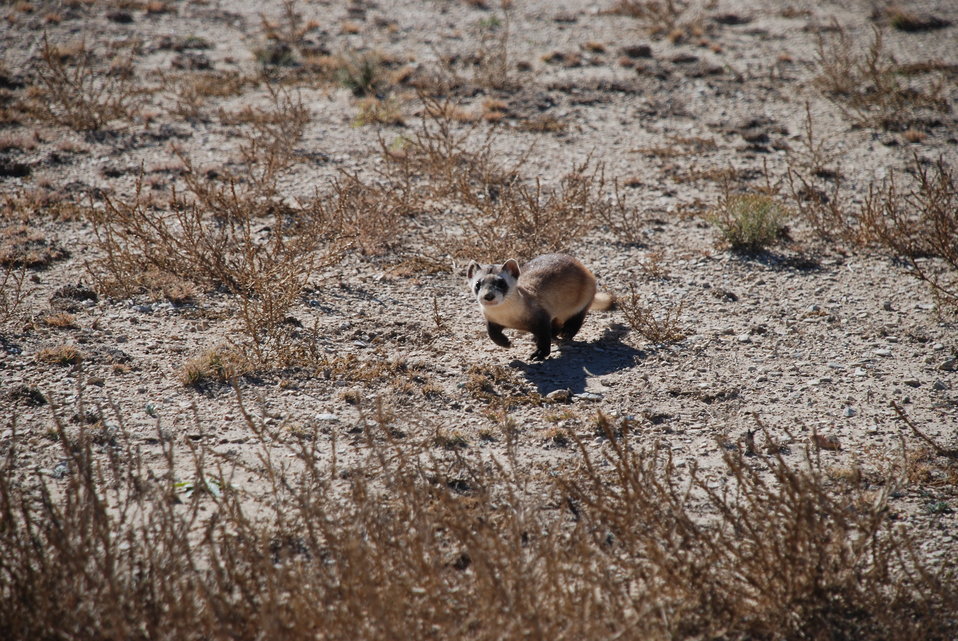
Black-footed Ferret Release

On Wednesday, October 30, 2013, thirty endangered black-footed ferrets were released onto cattle rancher Gary Walker's land, west of Pueblo, Colorado.

The release launched a potentially new way of preserving endangered species and was accomplished by way of a Safe Harbor Agreement (SHA). This SHA provides opportunities for private and Tribal landowners to volunteer their lands for reintroductions of this endangered species without affecting their land-use activities beyond mutually agreed-upon measures. It also extends these assurances to surrounding non-participating lands and other landowner interests. This SHA will be an important step in promoting the recovery of this iconic species.